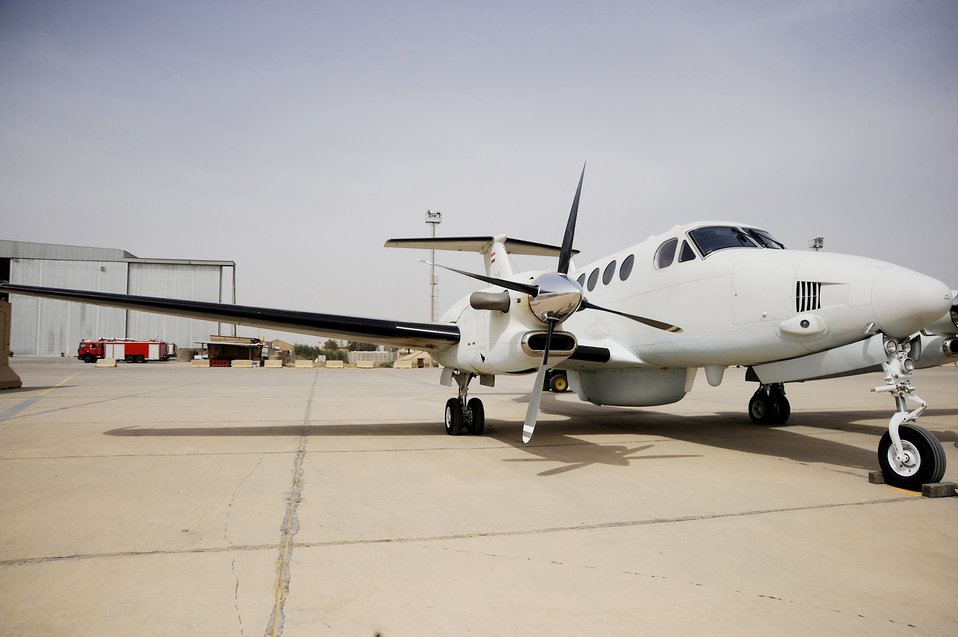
Iraqi Air Force brings ISR capabilities online

An Iraqi air force King Air 350 sits on the airfield at Al Muthana Air Base, Iraq, May 8. The airplane is assigned to the Iraqi air force's King Air Squadron 87 and boasts the intelligence, surveillance and reconnaissance capabilities necessary for the detection and deterrence of insurgent activity.